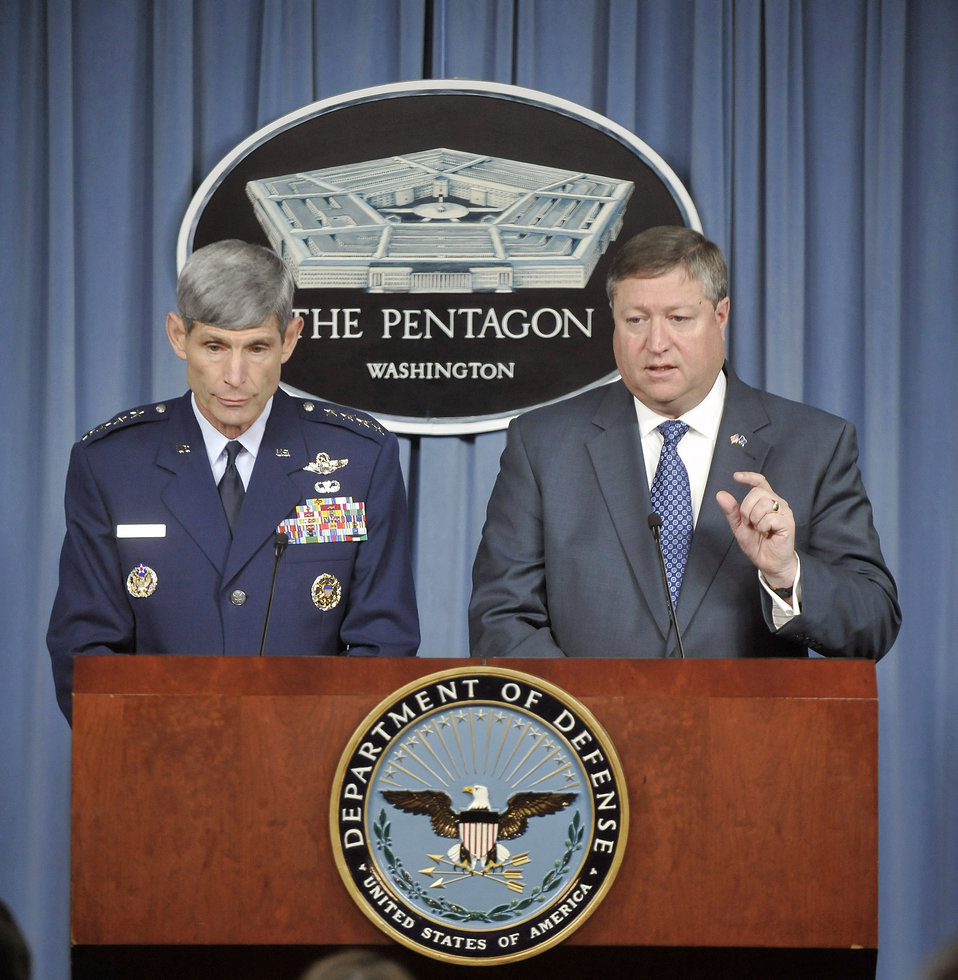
Air Force Accountability

Acting Secretary of the Air Force Michael B. Donley and Air Force Chief of Staff Gen. Norton A. Schwartz speak to members of the press on matters of accountability with regard to nuclear assurance from the Pentagon Sept. 25. The press conference outlined actions taken by the Air Force in response to the Donald Report.